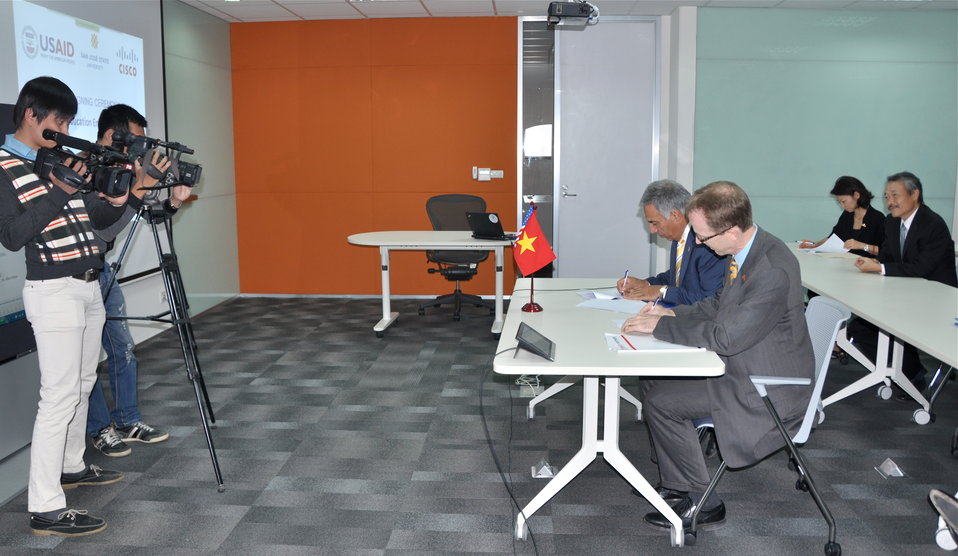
USAID, San Jose State University and Cisco Systems sign the Social Work Education Enhancement Program MOU

Hanoi, November 13, 2013.